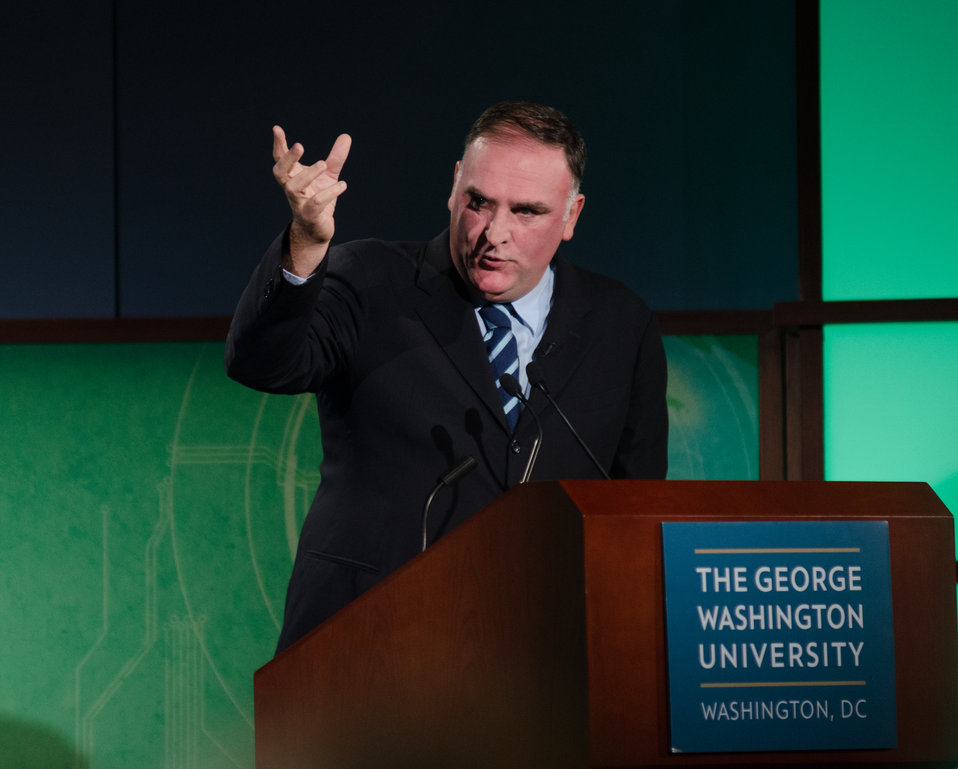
Jose Andres, Chef/Owner of ThinkFoodGroup, Founder of World Central Kitchen, and Culinary Creator and Advocate, speaking at the Feeding the Planet Summit of leaders from agriculture, business, finance, academia, Non Governmental Organization, government and media, along with a large contingent of college students to engage around promising innovations in global agriculture and food security. The Summit spotlights transformation and scalable developments in policy, practices and technologies with special attention to related issues of gender, climate change and urbanization at The George Washington University in Washington, DC, on Wednesday, Oct. 31, 2013.